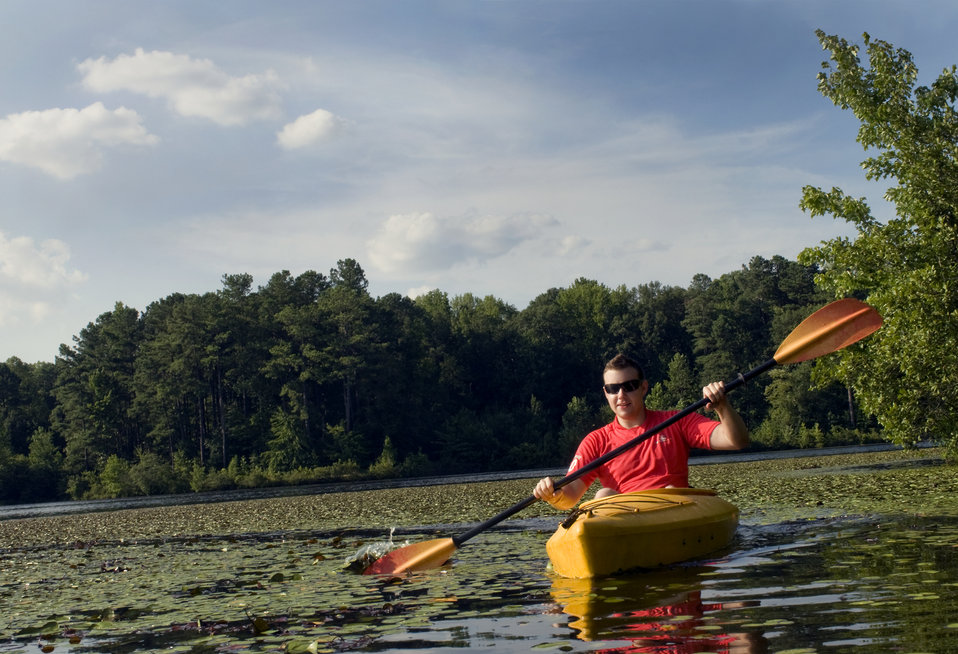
This man was kayaking atop a lily pad-covered lake in Georgia on what appeared to be a very sunny day. He smartly made the choice to wear a pair of dark sunglasses to protect his eyes from the sun's rays, and had applied sunscreen in order to protect his sun-exposed skin from harmful ultraviolet light as well. In the kayak, he'd packed some bottled water so as to avoid dehydration while out on the water.